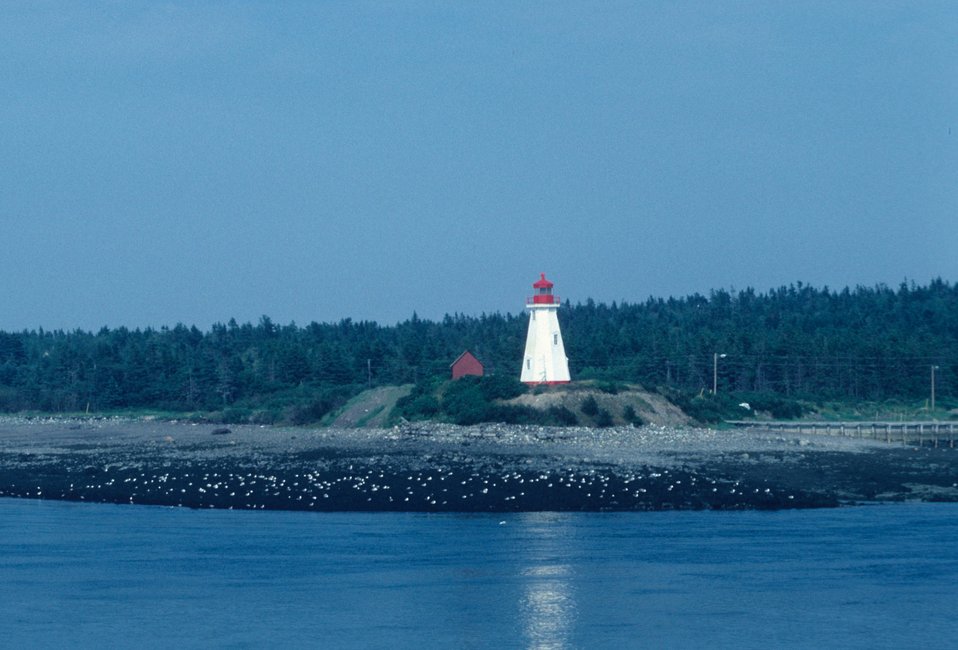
Unidentified lighthouse